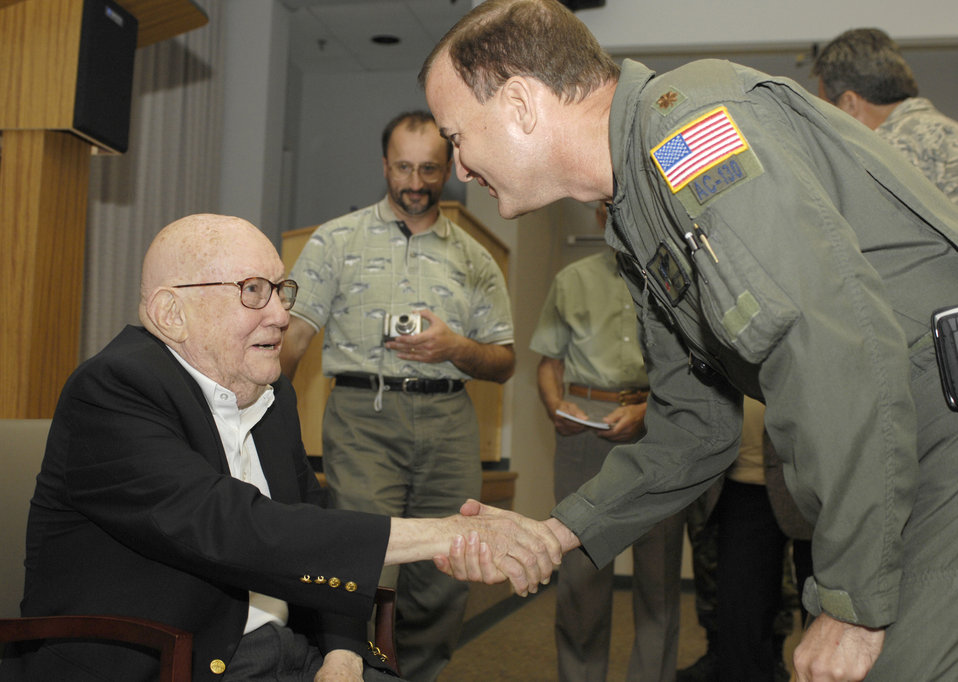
General Alison

Retired Maj. Gen. John Alison (left), the deputy commander of the 1st Air Commando Group in 1943, is greeted by Maj. Brian Strang (right), of Headquarters Air Force Special Operations Command, after the general's presentation May 6, 2008, at the U.S. Air Force Special Operations School at Hurlburt Field, Fla.